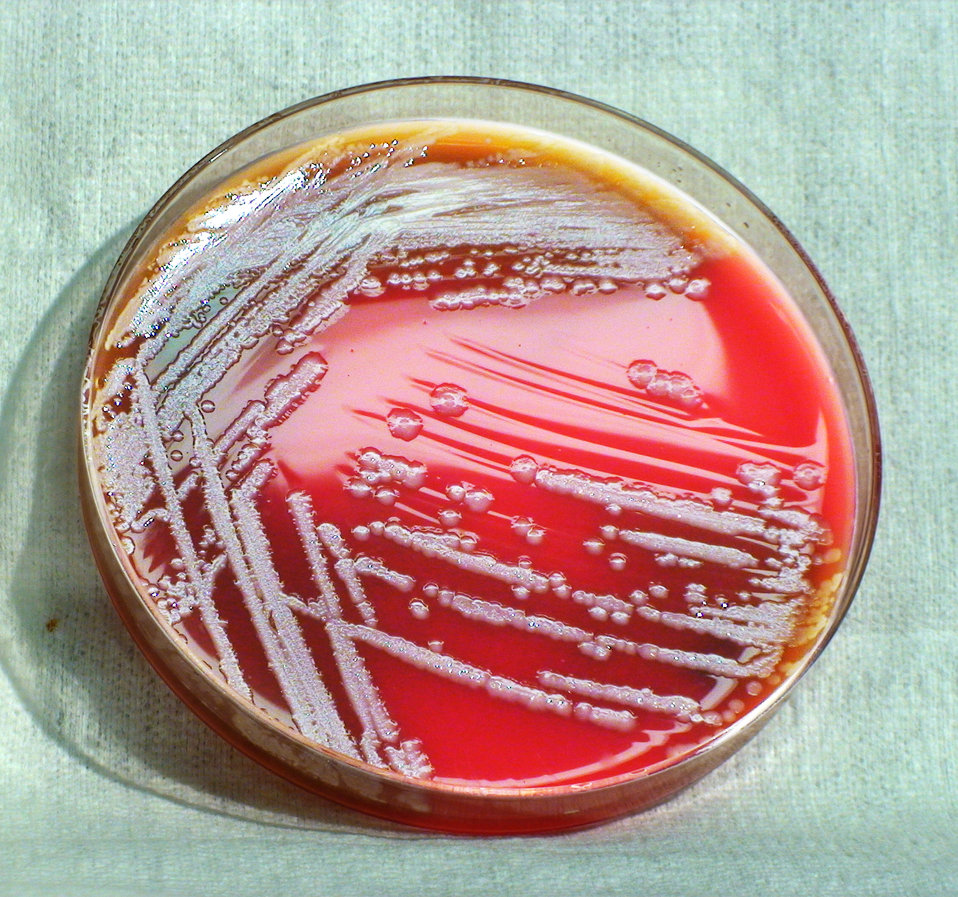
This photograph depicts the colonial morphology displayed by Gram-negative Burkholderia thailandensis bacteria, which was grown on a medium of sheep's blood agar (SBA), for a 48 hour time period, at a temperature of 42�C. Of importance, is the metallic sheen displayed by these colonies.